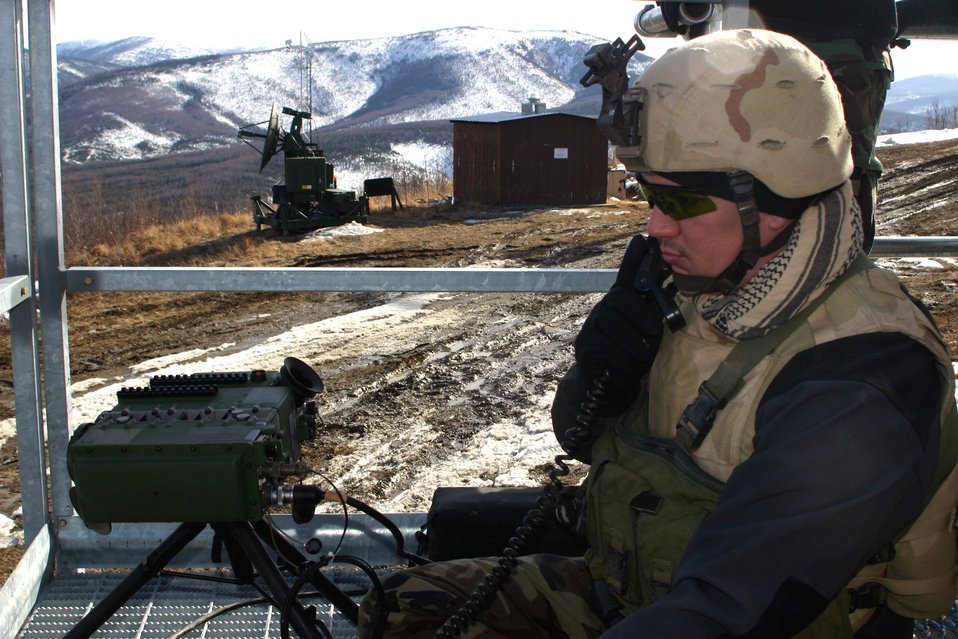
Red Flag-Alaska wraps up

Staff Sgt. Neil Adams prepares to hit a target with a marker during a close-air-support mission at Eielson Air Force Base, Alaska, on Friday, April 28, 2006, during Red Flag-Alaska. Sergeant Adams is a joint terminal attack controller with the 25th Air Support Operations Squadron at Hickam AFB, Hawaii.